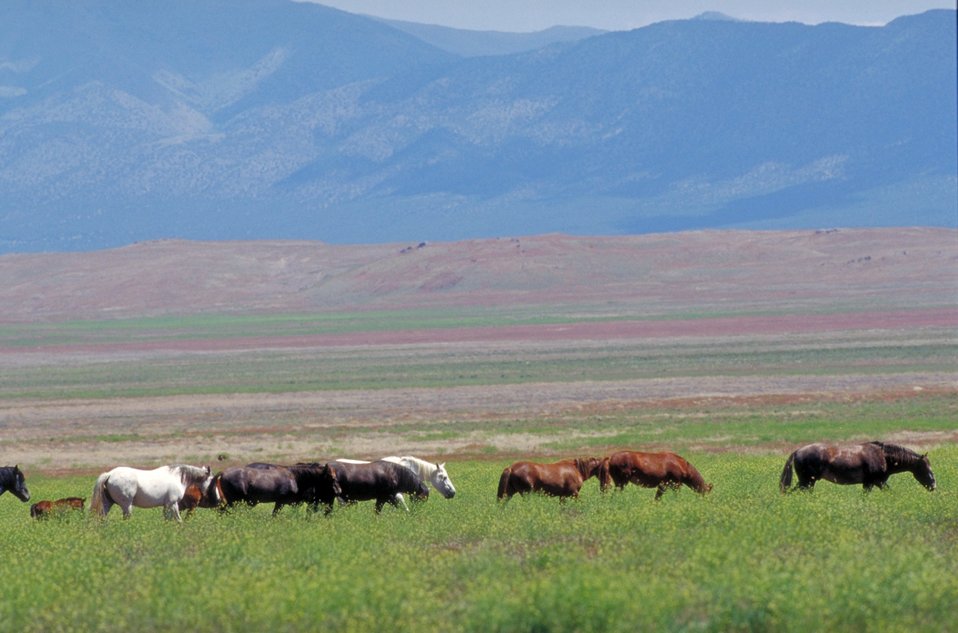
Onaqui Herd near Dugway, Utah.